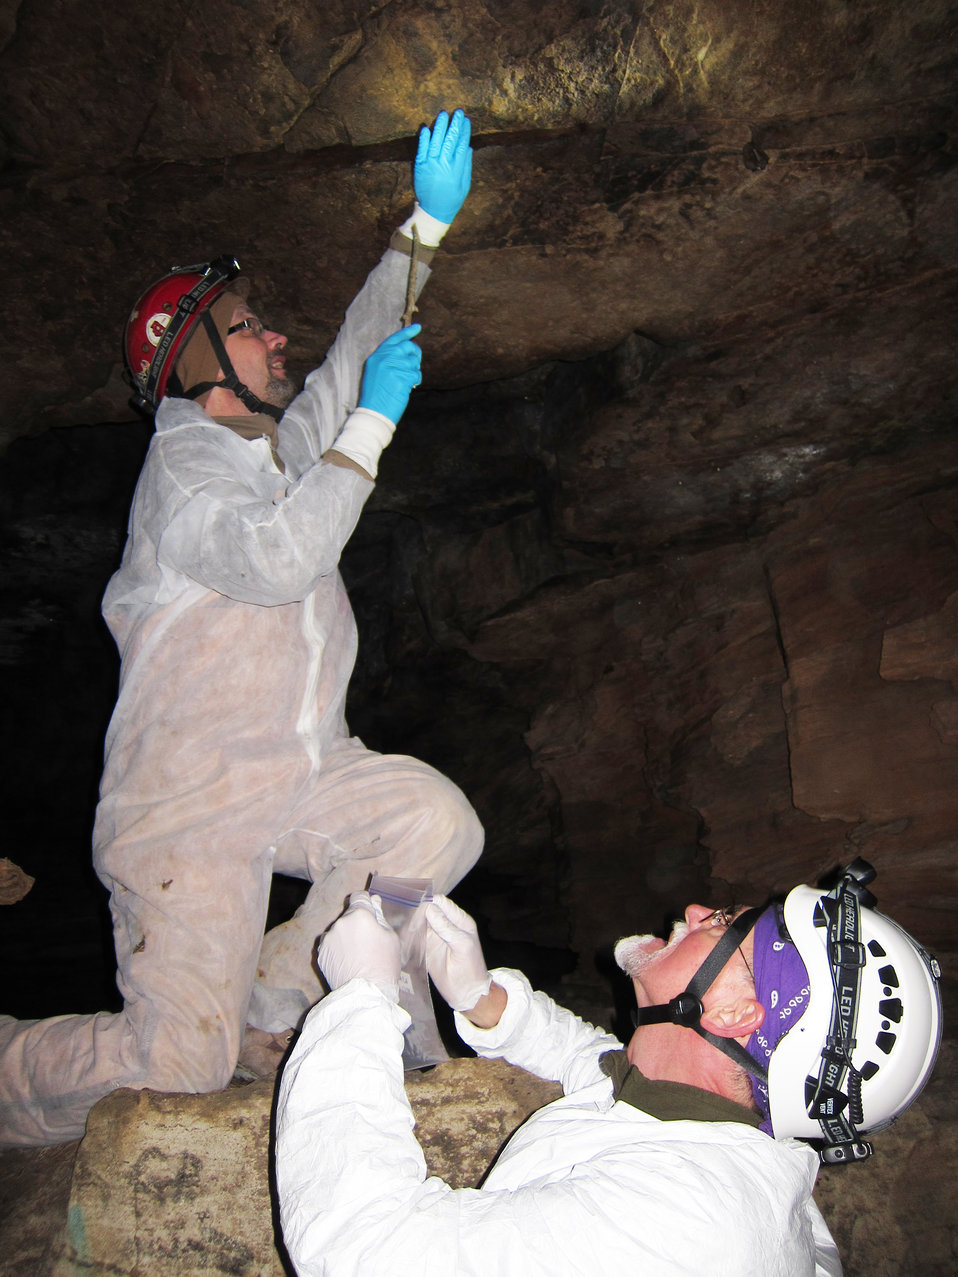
Biologists collect bat with visible symptoms typical of WNS

Joe Kath (left, Illinois Department of Natural Resources Endangered Species Manager/Bat Specialist) and Rod McClanahan (right, US Forest Service, Shawnee National Forest, Wildlife Biologist) extract a bat from a ceiling crack. This bat is suspected of being infected with Geomyces destructans. Hardin County, Illinois, 20 February 2013.